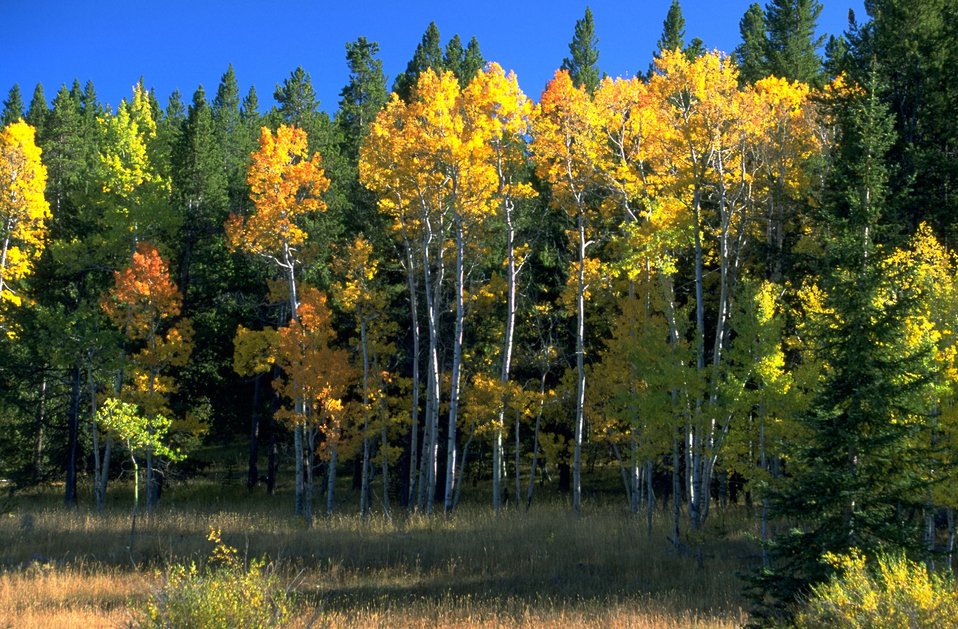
Aspen grove turning to fall colors--some Douglas fir encroachment